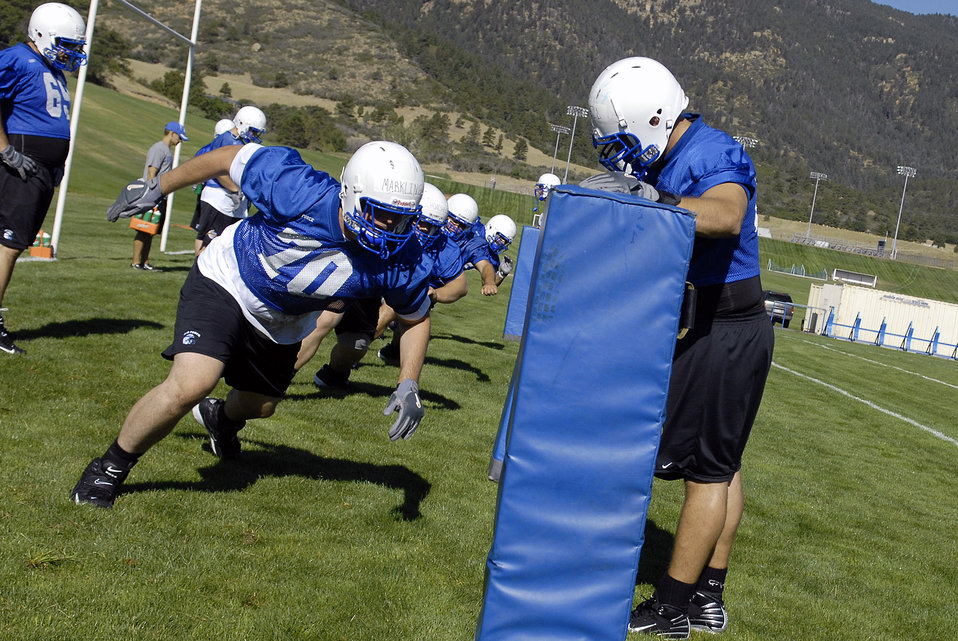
First day of football practice at the Academy

Offensive tackle Cadet 3rd Class Matt Markling participates in drills as the Falcons practice in preseason camp July 31 at the U.S. Air Force Academy in Colorado. The Falcons had their best Mountain West Conference record in school history in 2007 with a 9-4 record.